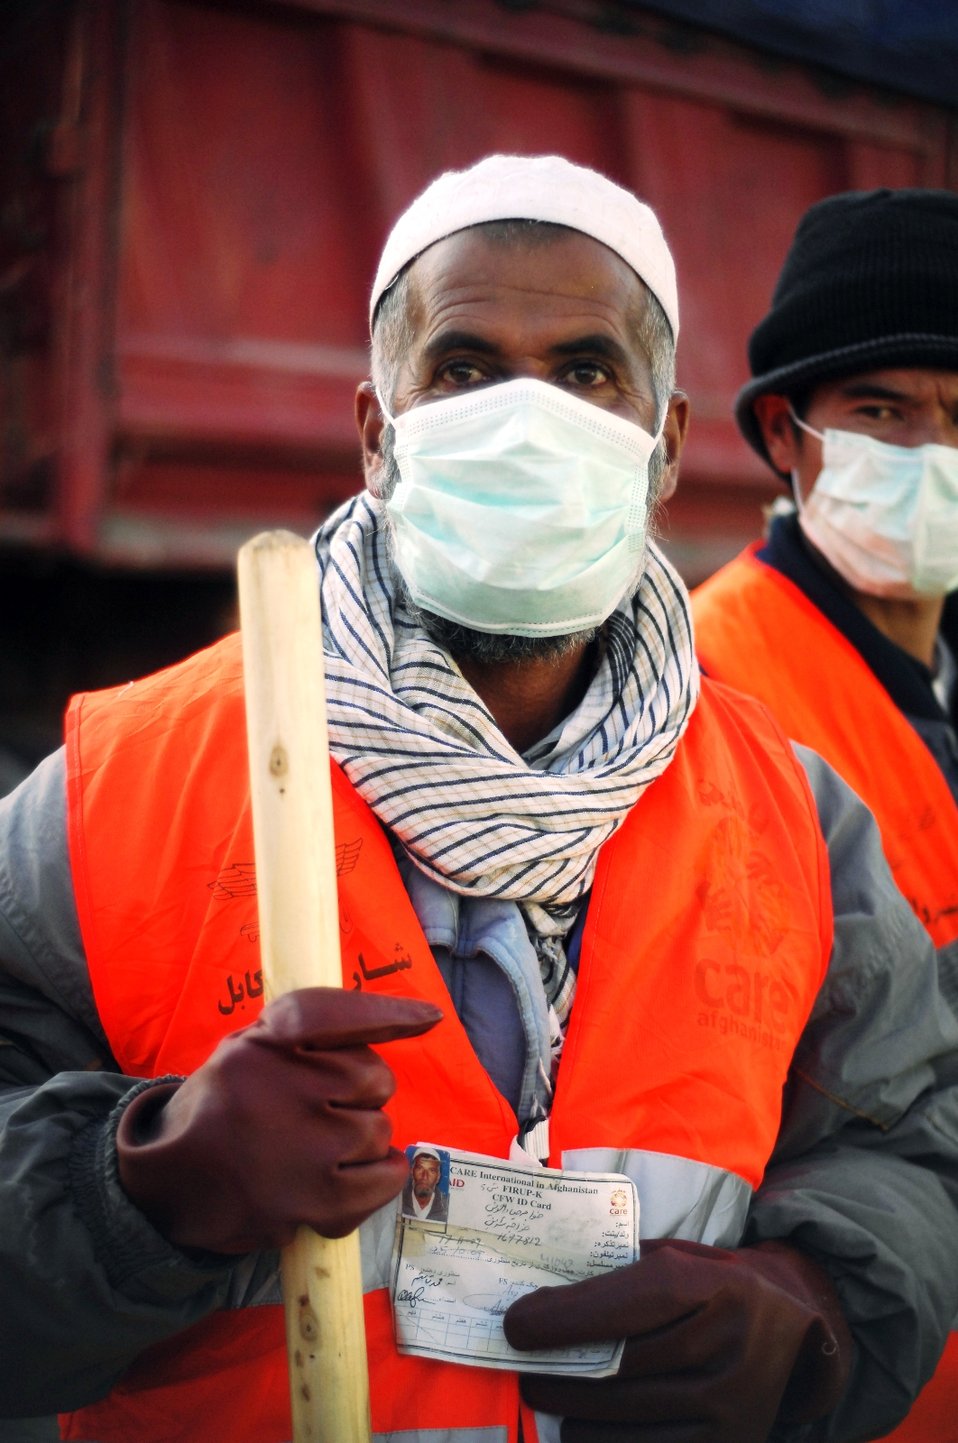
Care17